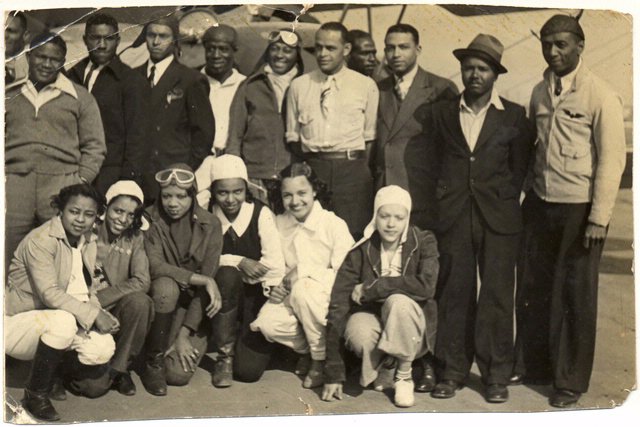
William J. Powell: Promoted African-American involvement in aviation

William J. Powell was an aviation entrepeneur who advanced African-American participation in flying.